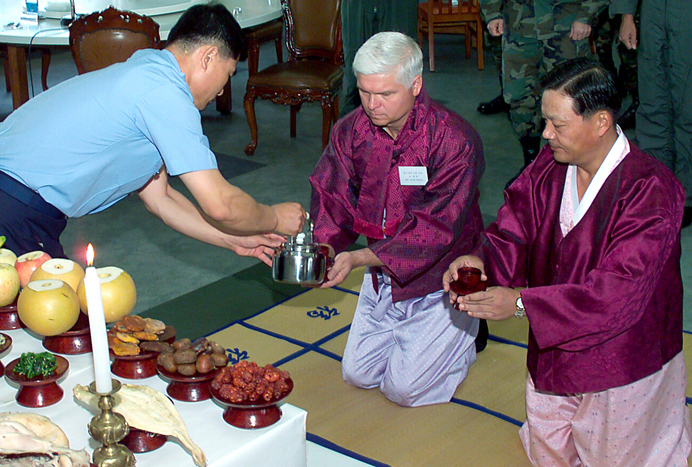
Deployed Airmen experience local tradition

GWANGJU AIR BASE, South Korea -- Col. Dave Watson (center) and South Korean air force Brig. Gen. Young Woo Kwon participate in a traditional ceremony honoring ancestors from the past, during a Chu Sok holiday celebration here Sept. 28. They are dressed in traditional South Korean clothing worn during holidays. Colonel Watson is the 3rd Air Expeditionary Group commander, and General Kwon is the 1st Fighter Wing commander.